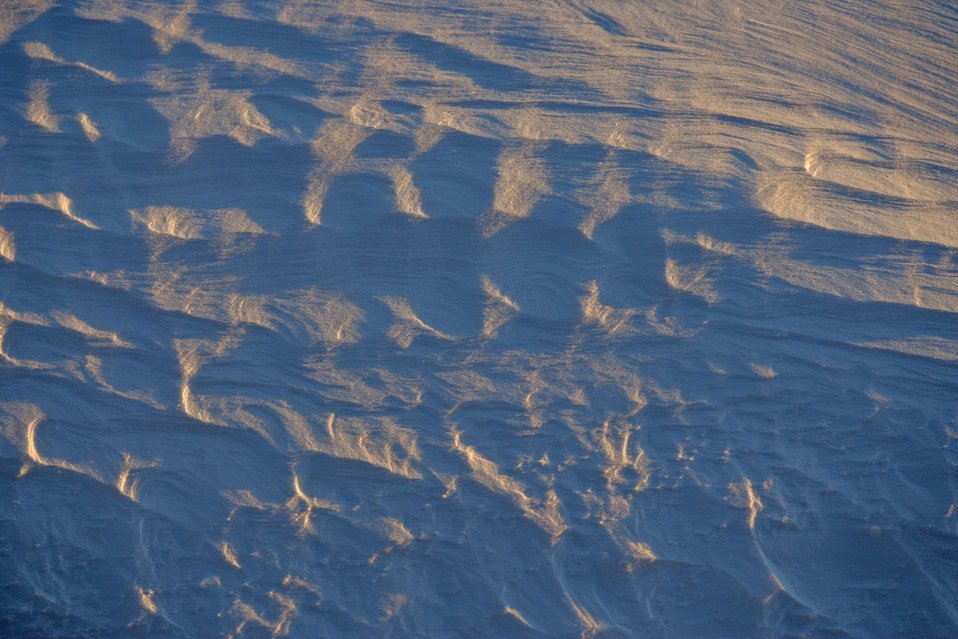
Wind-sculted snow patterns (sastrugi).